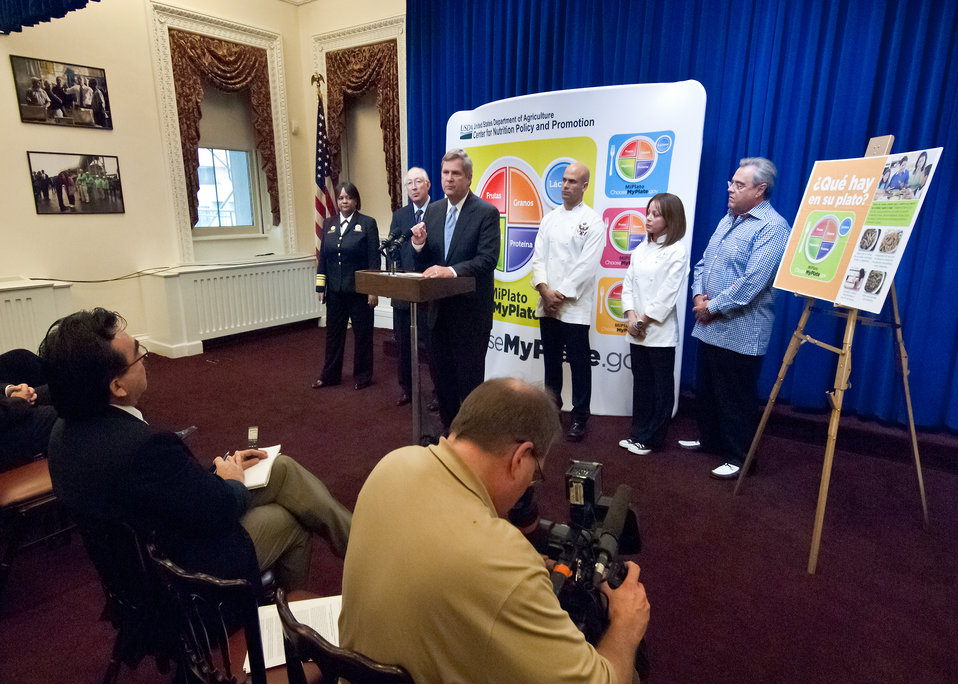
Agriculture Secretary Tom Vilsack answers a question posed by Ruben Barrera a correspondent from the Mexican State News Agency during the announcement of MiPlato the Hispanic version of MyPlate. From left behind Secretary Vilsack are Surgeon General Regina Benjamin, Interior Secretary Ken Salazar, White House Chef Sam Kass, Chef Marcella Valladolid and Chef Pepín. The group highlighted the federal government's new food icon, MiPlato that will help serve as a reminder to help Hispanic consumers make healthier food choices as Part of Hispanic Heritage Month Celebration. The event was held in the Eisenhower Executive Office Building in Washington, DC, Friday, September 30, 2011. Earlier this year, USDA unveiled MyPlate as a new generation icon with the intent to prompt consumers to think about building a healthy plate at meal times and to seek more information to help them do that by going to www.ChooseMyPlate.gov. The new MiPlato and MyPlate icons emphasize the fruit, vegetable, grains, protein and dairy food groups. The announcement is part of the Obama Administration’s celebration of Hispanic Heritage Month, which this year carries the theme “Renewing the American Dream,” and this week focuses on the community’s well being. The tips are part of a multi-year effort to raise awareness and educate consumers of every age on the importance of healthier eating and physical activity.